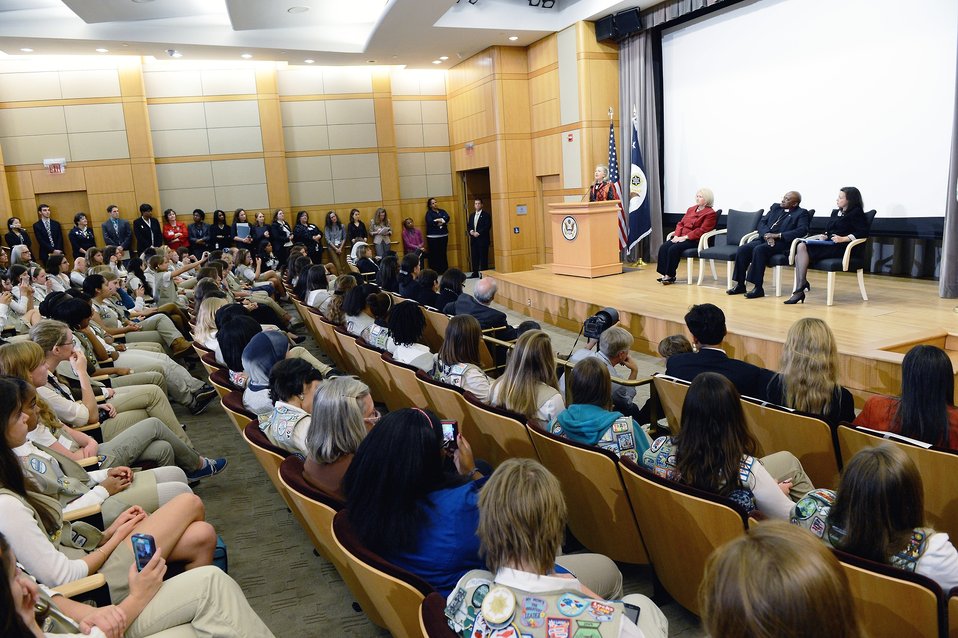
Secretary Clinton Addresses Girl Scouts in Honor of the International Day of the Girl

U.S. Secretary of State Hillary Rodham Clinton and Archbishop Desmond Tutu deliver remarks to a group of visiting Girl Scouts in honor of the first-ever International Day of the Girl on October 11 at the U.S. Department of State in Washington, D.C., October 10, 2012.